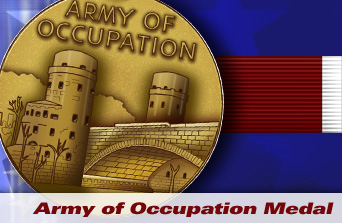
Army of Occupation Medal was established in 1946 and the order has been amended several times to cover areas not originally authorized. It is awarded for 30 consecutive days at a normal post of duty on assignment to the armies of occupation.